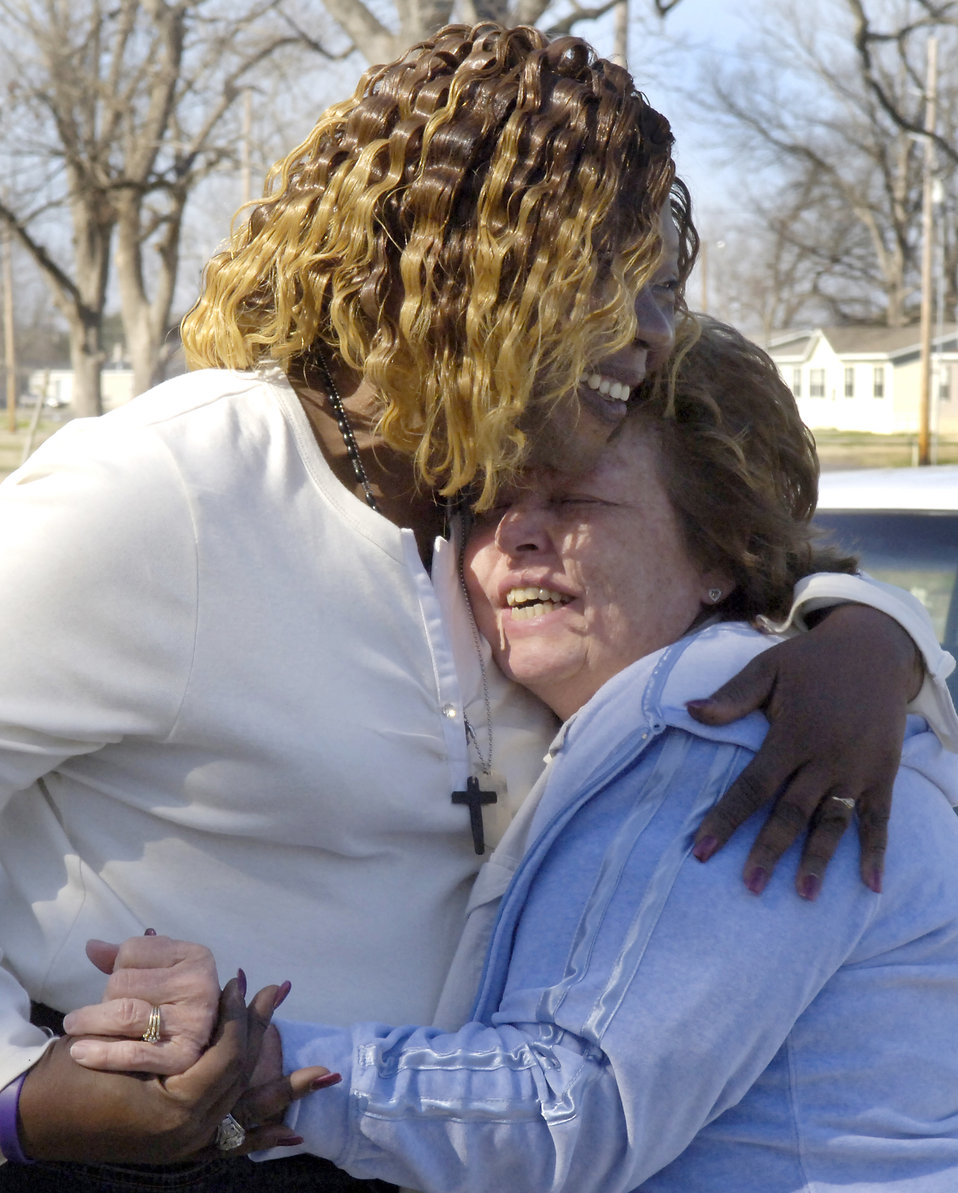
Retired Airman brings Soldier's mother peace

BARKSDALE AIR FORCE BASE, La. (AFPN) -- Denise Godbolt (left), mother of late Army Sgt. Lee Myles Godbolt, hugs Susan Jarrett for the two new shadow boxes presented to her Feb 8. Retired Tech. Sgt. Mike Jarrett, woodcraft manager here, replaced the original shadow boxes that were damaged in Hurricane Katrina.